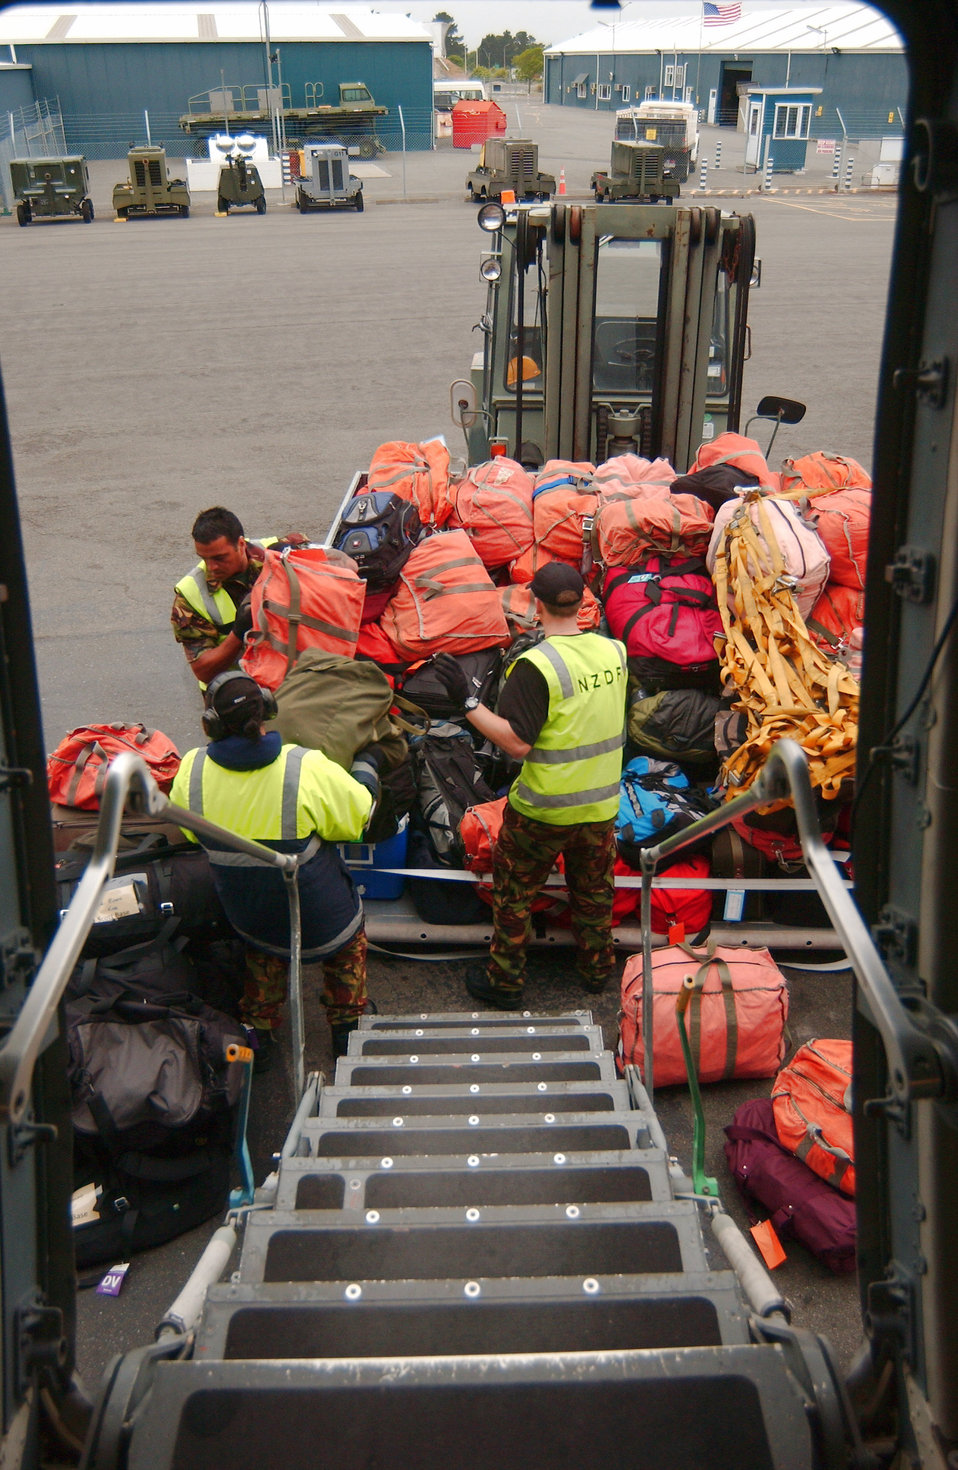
McChord Airmen fuel Operation Deep Freeze

Members of the New Zealand Defence Force prepare to load baggage on a C-17 Globemaster III prior to an Operation Deep Freeze mission to Antarctica Dec. 1. The Airmen and the C-17 Globemaster III are from McChord Air Force Base, Wash.